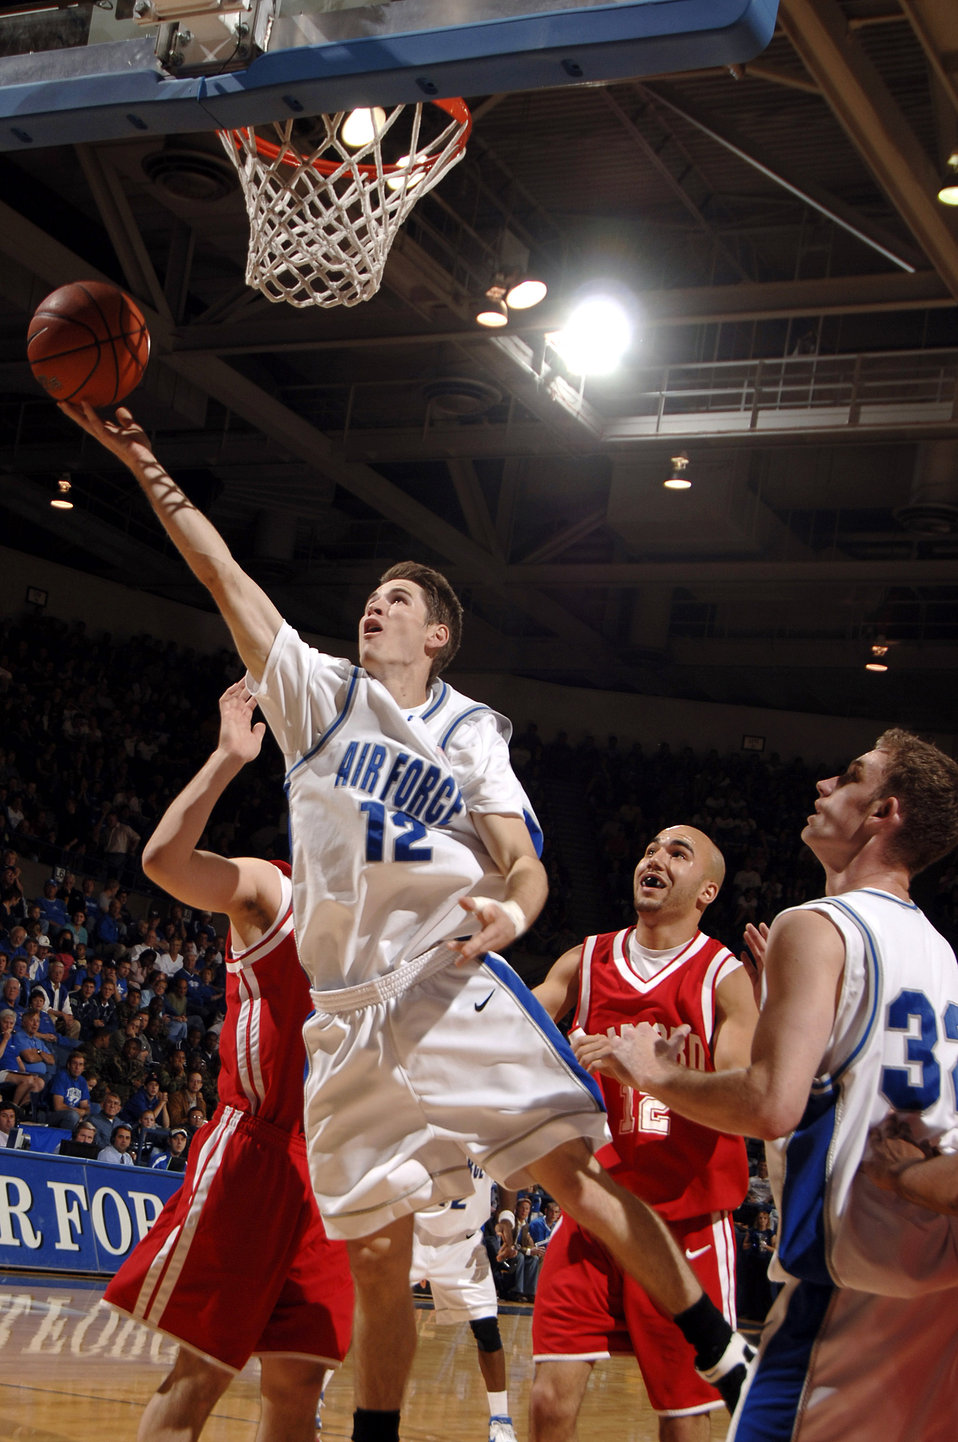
Falcons score overtime victory

Senior guard Tim Anderson pulls down a rebound as the Air Force Falcons defeated the Radford Highlanders 52-47 in overtime Nov. 19 at Clune Arena. Air Force, under first-year coach Jeff Reynolds, is 4-0 on the season.